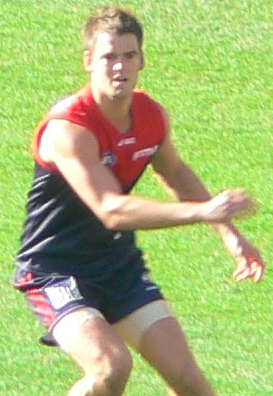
Jared Rivers playing for Melbourne during the 2007 AFL Season